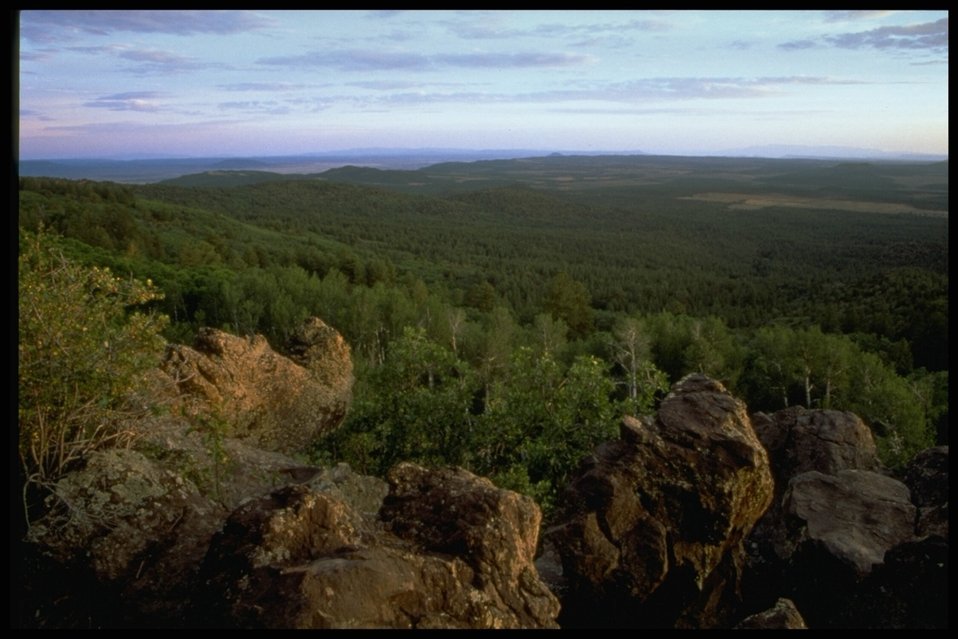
Beautiful Panoramic photograph of the Grand Canyon-Parashant National Monument area.